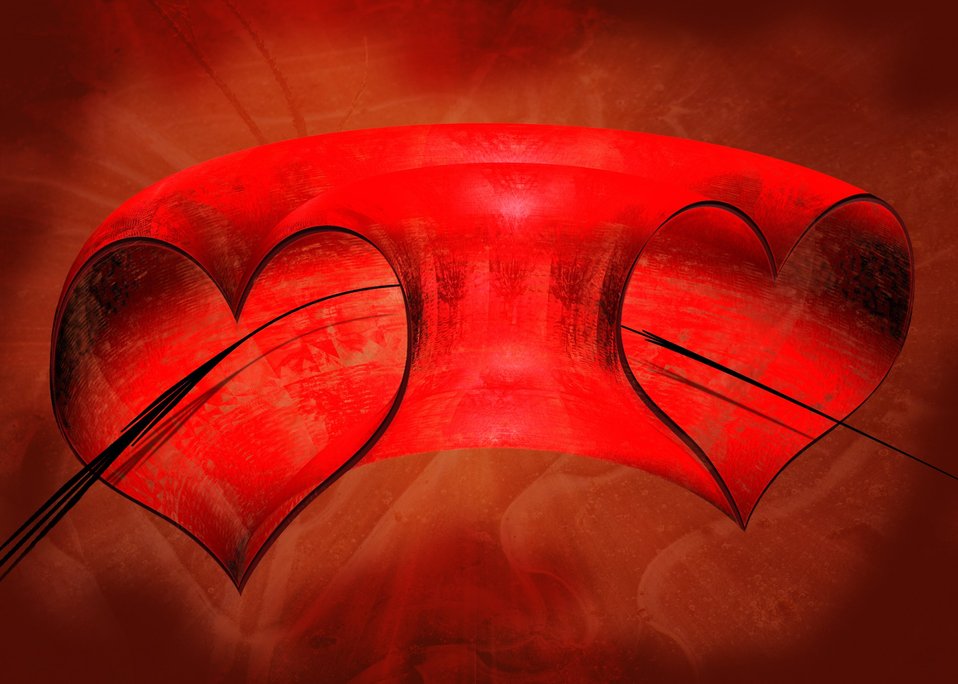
Double heart.